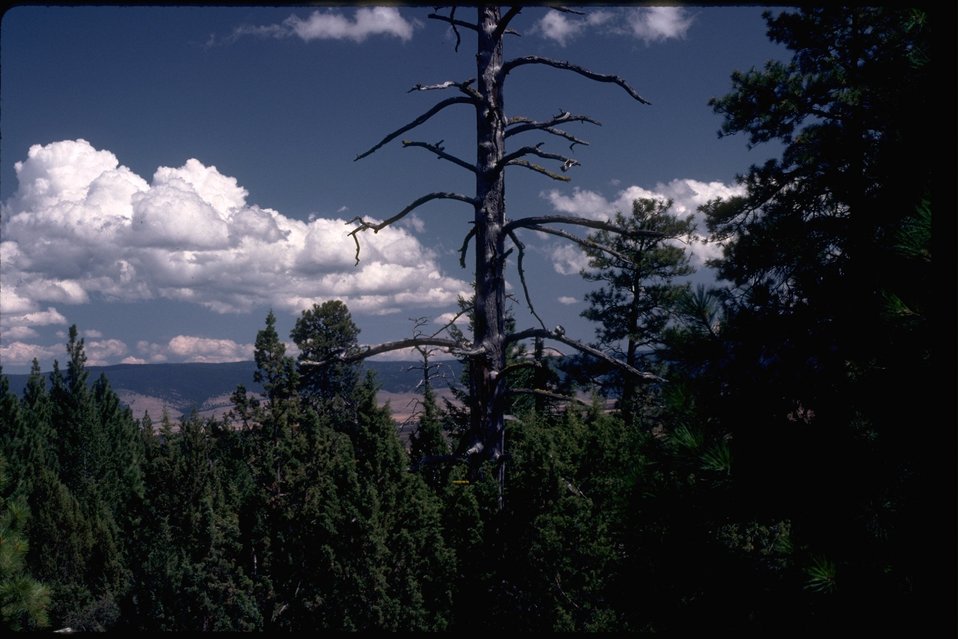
Timbered parcel near Strawberry Mountain. OR 2-98